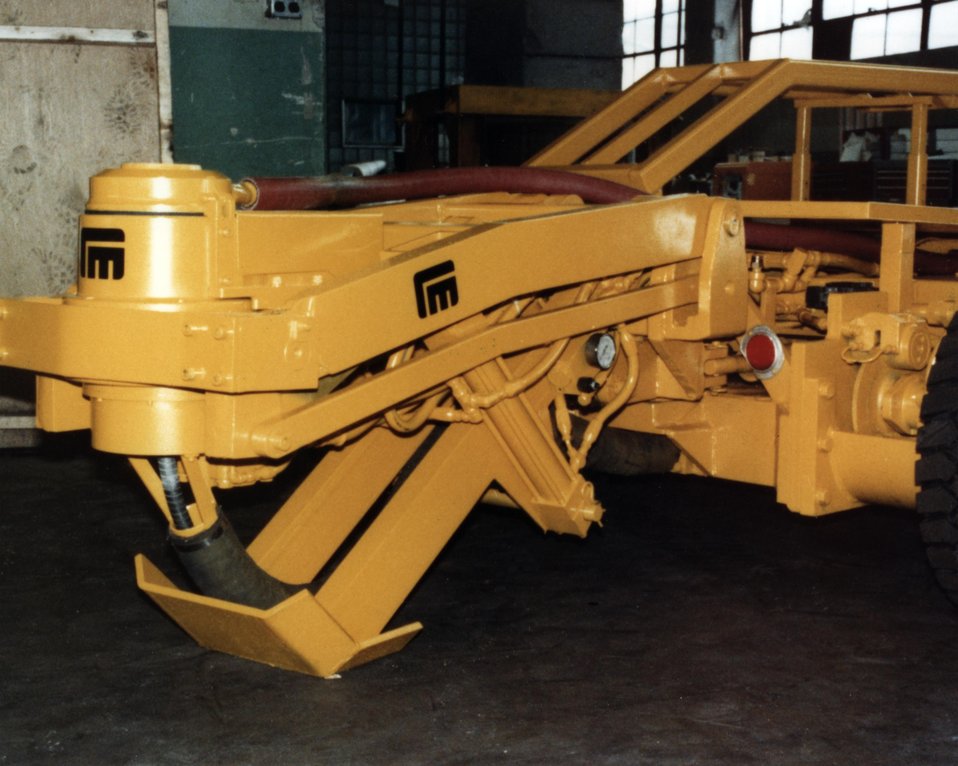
FLEXIBLE ROOF DRILL ABOVE GROUND, SHOWING DRILL HEAD, ARM, AND STAB JACK LEG.

THE PREDOMINANT UNDERGROUND MINING METHOD IN THE U.S. IS THE 'ROOM AND PILLAR' METHOD, A TERM DERIVED FROM THE MINING PATTERN OF A SERIES OF EXCAVATED AREAS (ROOMS) AND EXCAVATED AREAS (PILLARS) WHICH ARE LEFT TO SUPPORT THE ROOF. A MAJOR INCREASE IN PRODUCTION AND EFFICIENCY COULD BE ACHIEVED BY INTEGRATING THE ROOF SUPPORT AND EXTRACTION FUNCTION.